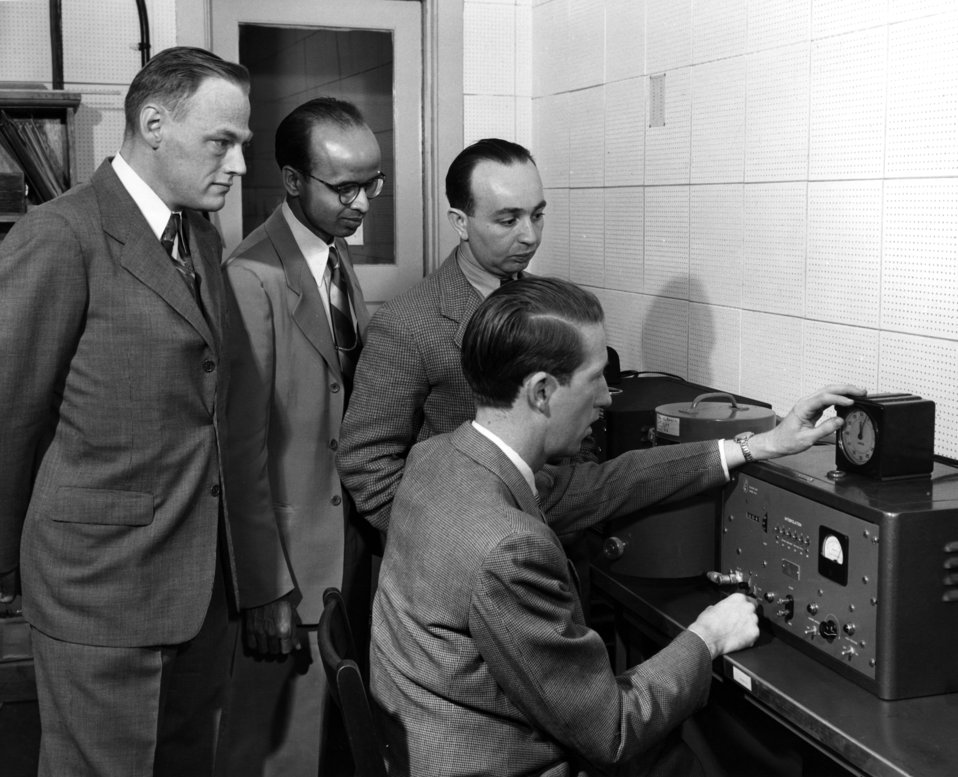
Dr. Pollard, Dr. Krishman, Dr. Alterman, Dr. Overman ORINS Oak Ridge

5334-1 DOE photo Ed Westcott 1-3-1949 Oak Ridge Tennessee